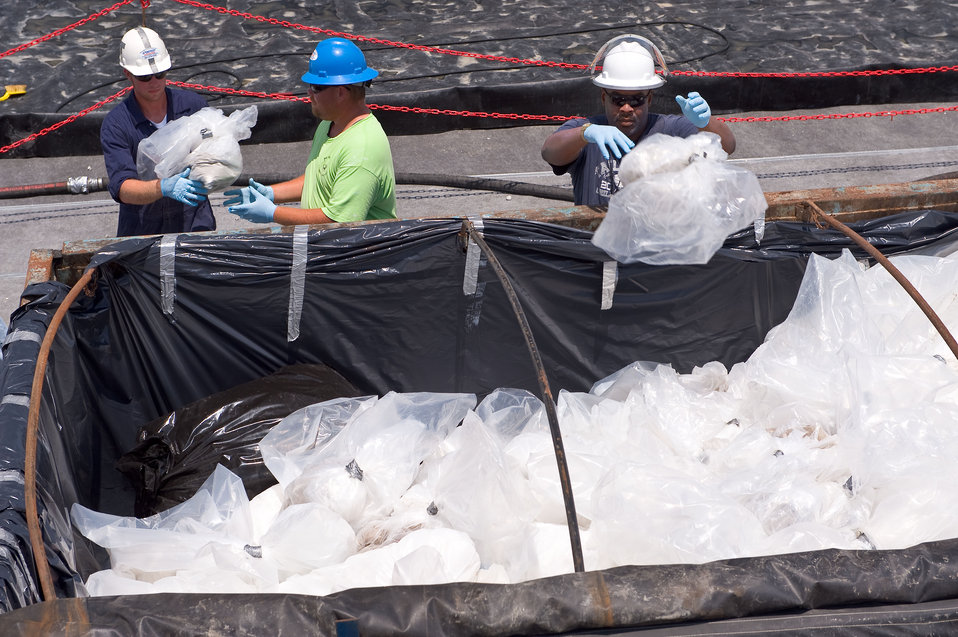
August 6, Assembly line of oil waste

Work crews carry bags of oil waste collected offshore to a lined roll off container.